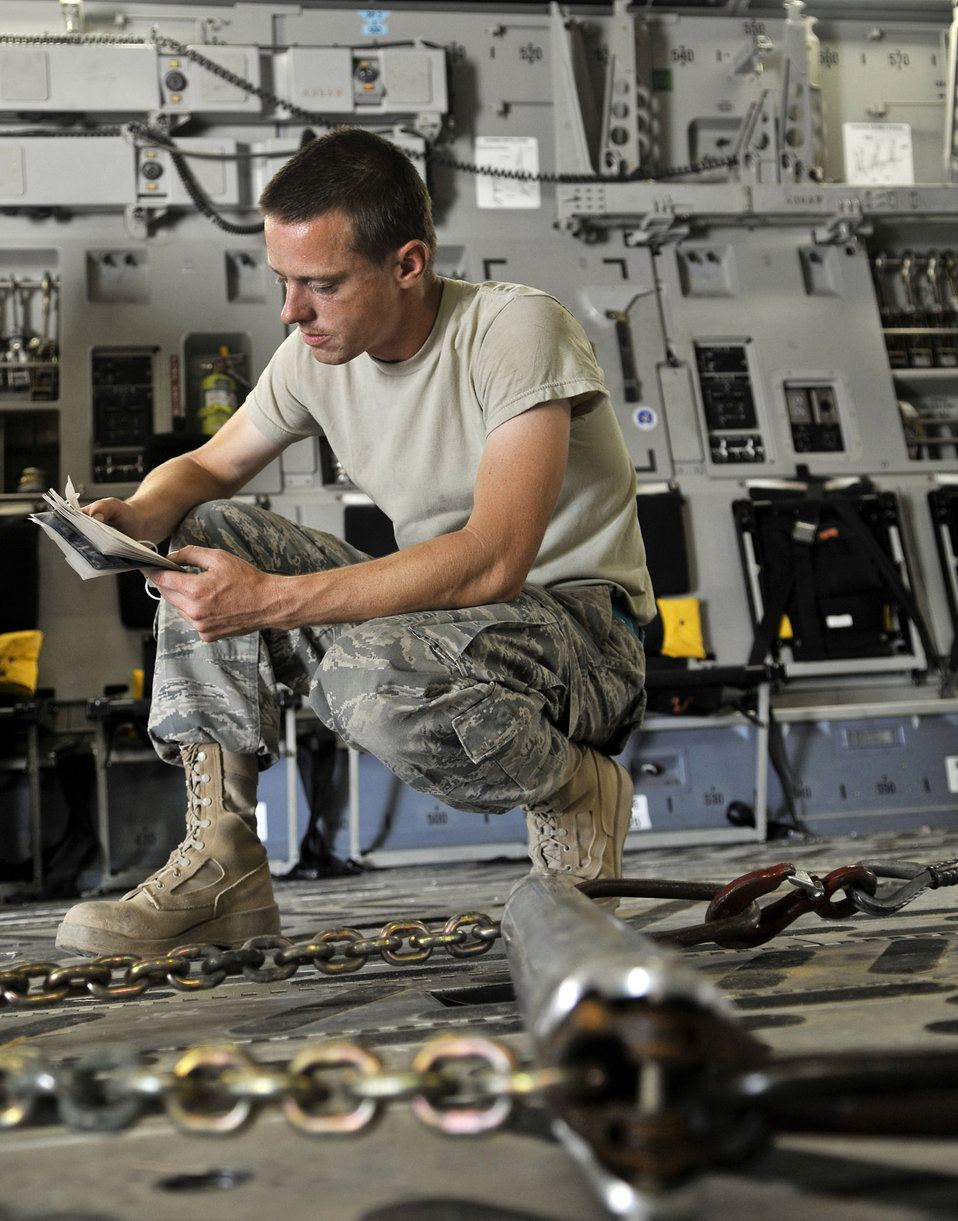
Moving HH-60 Pave Hawks

Staff Sgt. Keith McCarthy reads a technical order that details the disassembly instructions for a HH-60 Pave Hawk helicopter Aug. 12, 2010 at Joint Base Balad, Iraq. The helicopter is part of an exchange program that swaps aircraft.